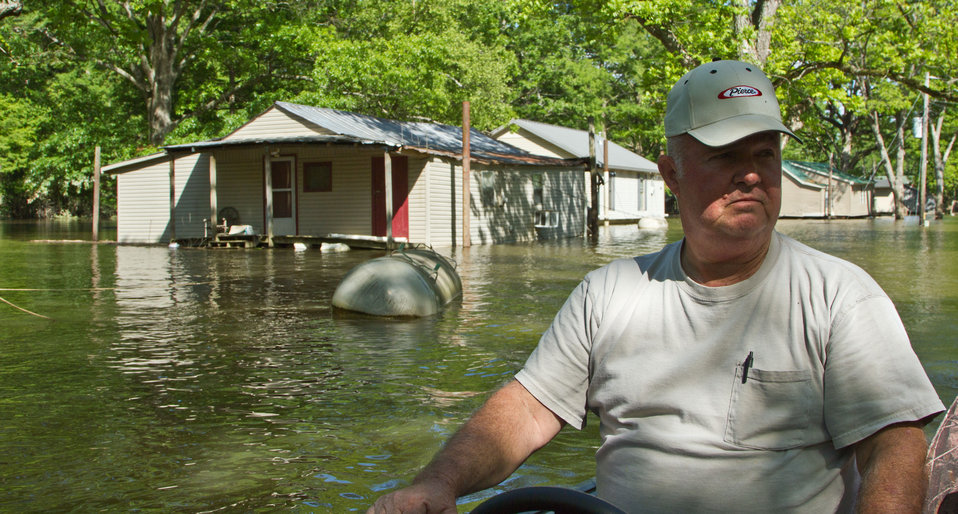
Lauderdale County Disaster Management Director Jim Jarrett uses a motorboat to survey the river flood impact on the people and property of this county in Tennessee, on Saturday, May 21, 2011. Homes were constructed on stilts; or float on Styrofoam blocks tethered to stationary poles. Most homes on floats survived well, but needed extensions welded to the poles before the rivers crested. The one seen to the left of Jarrett might have malfunctioned and became partially submerged and it's propane tank went adrift. The Mississippi and two other rivers border Lauderdale County on three sides. Today’s task was to look at as many of the approximately 300 homes in the county's river basin as possible. This area is near Open Lake.